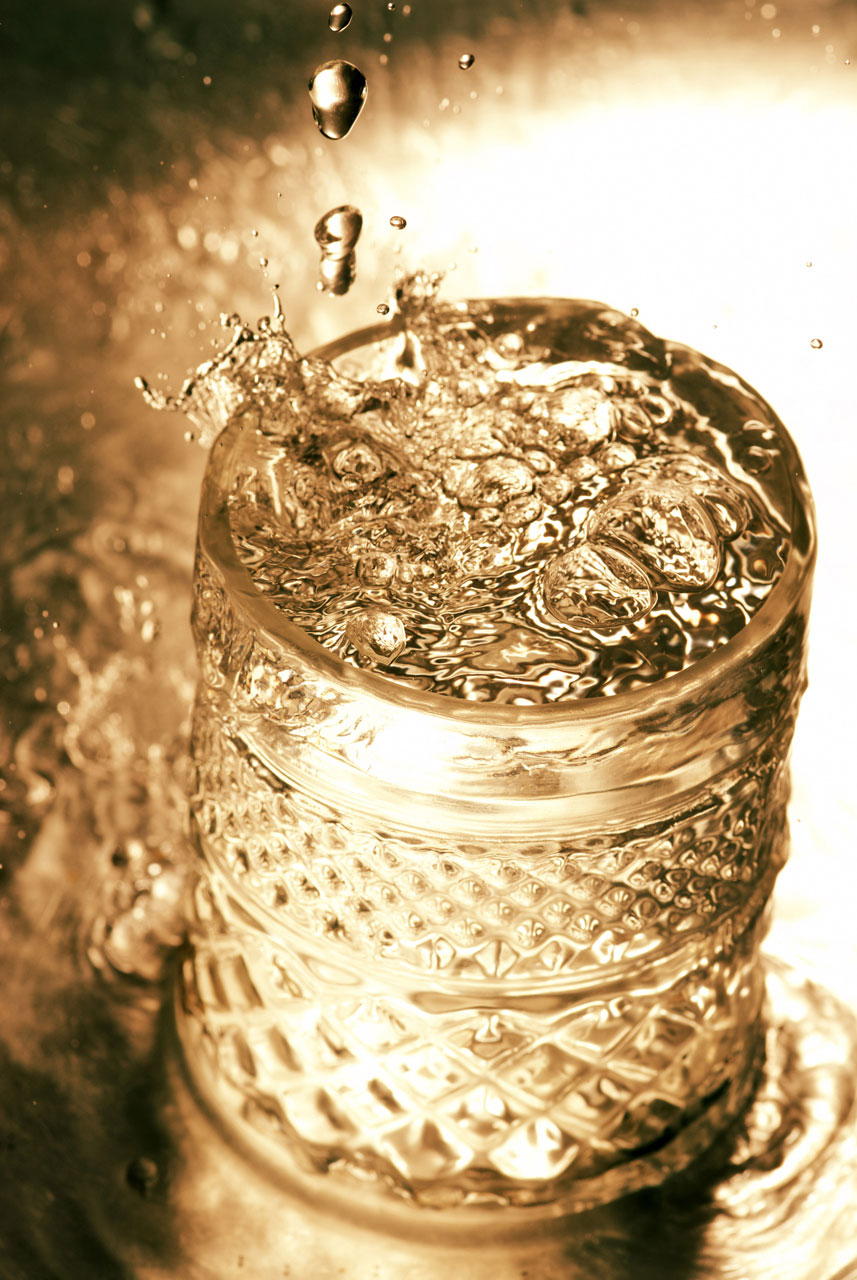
Silent water drops.